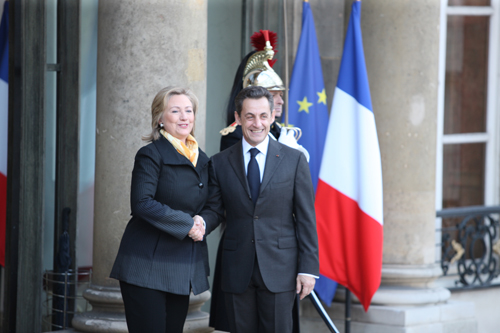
Secretary Clinton Is Greeted By French President Sarkozy

U.S. Secretary of State Hillary Rodham Clinton is greeted by French President Nicolas Sarkozy at the Elysée Palace in Paris, France, on March 14, 2011.